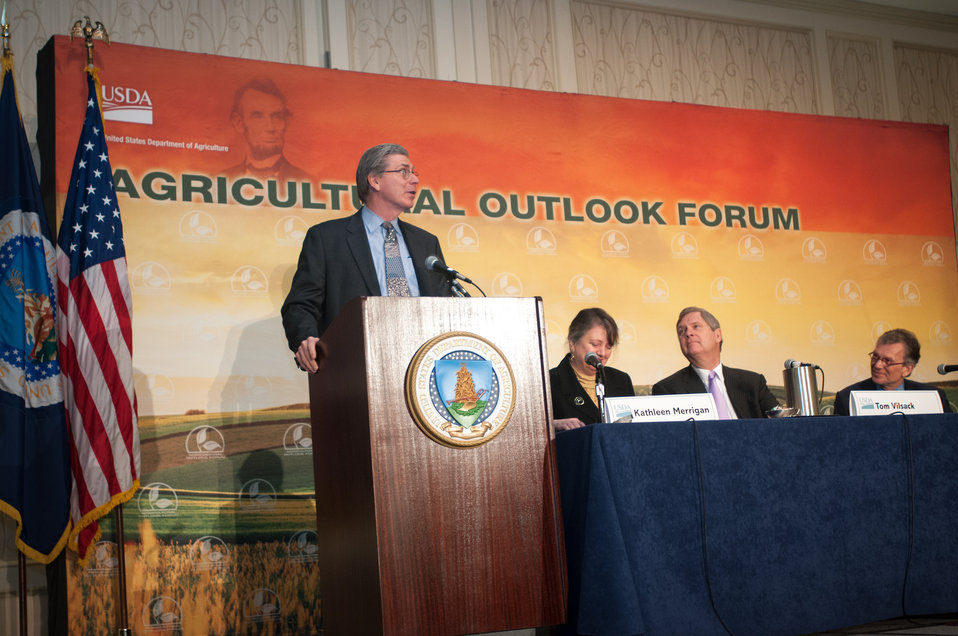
Agriculture Chief Economist Joseph Glauber presents remarks on the 2013 Agricultural Economic and Foreign Trade Outlook at the Opening session of the 2013 Agriculture Outlook Forum, in Arlington, VA, on Thursday, February 21, 2013.